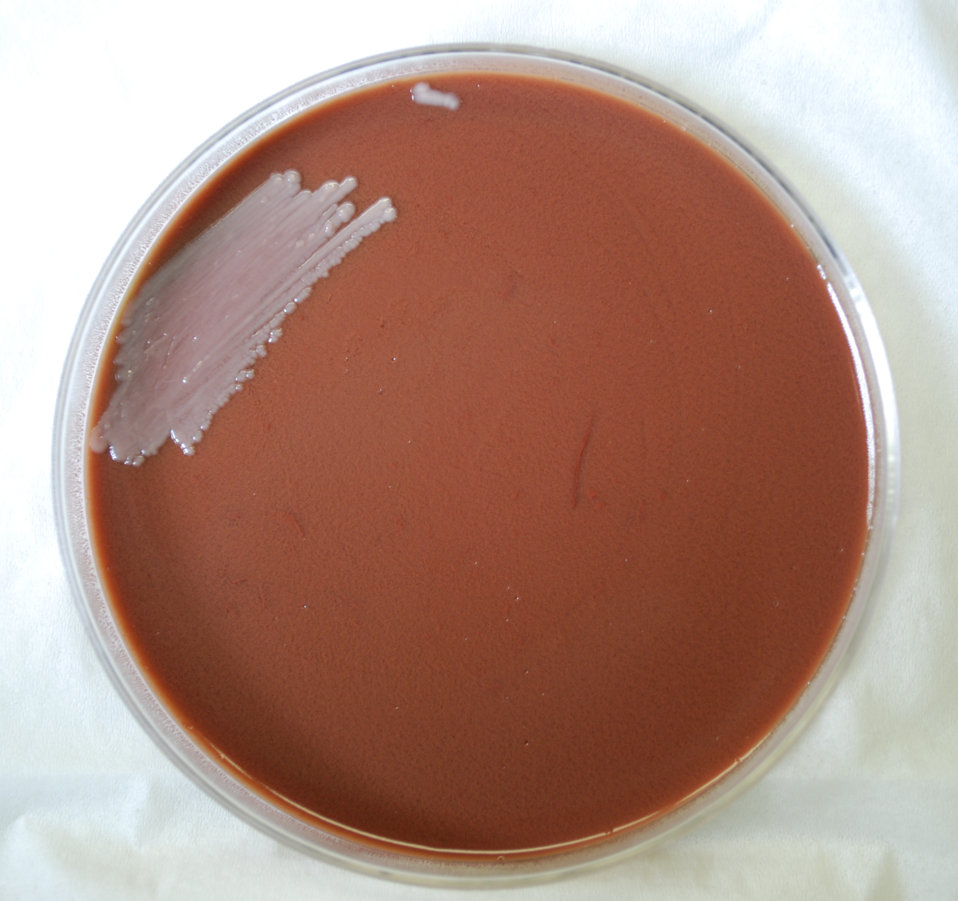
This photograph depicts the colonial morphology displayed by Gram-negative Burkholderia mallei bacteria, which was grown on a medium of chocolate agar, for a 48 hour time period, at a temperature of 37�C. B. mallei is the bacteria responsible for causing the infectious disease known as glanders. See PHIL 12240, for a closer view of these bacterial colonies.